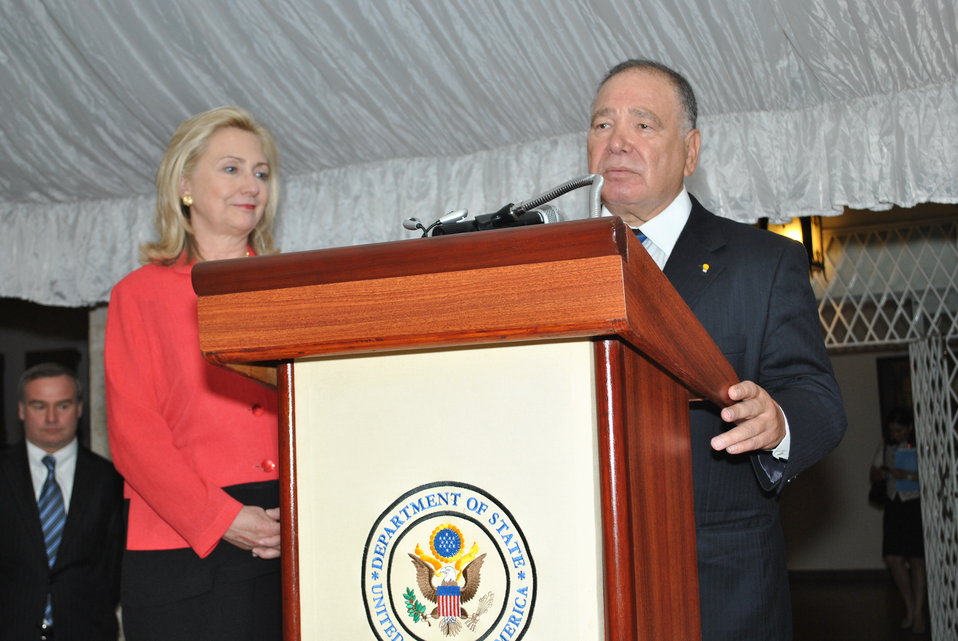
Ambassador Yzaguirre Introduces Secretary Clinton

U.S. Secretary of State Hillary Rodham Clinton accompanies U.S. Ambassador to the Dominican Republic Raul Yzaguirre during a meet and greet with U.S. Embassy employees in Santo Domingo, Dominican Republic, on October 5, 2011.